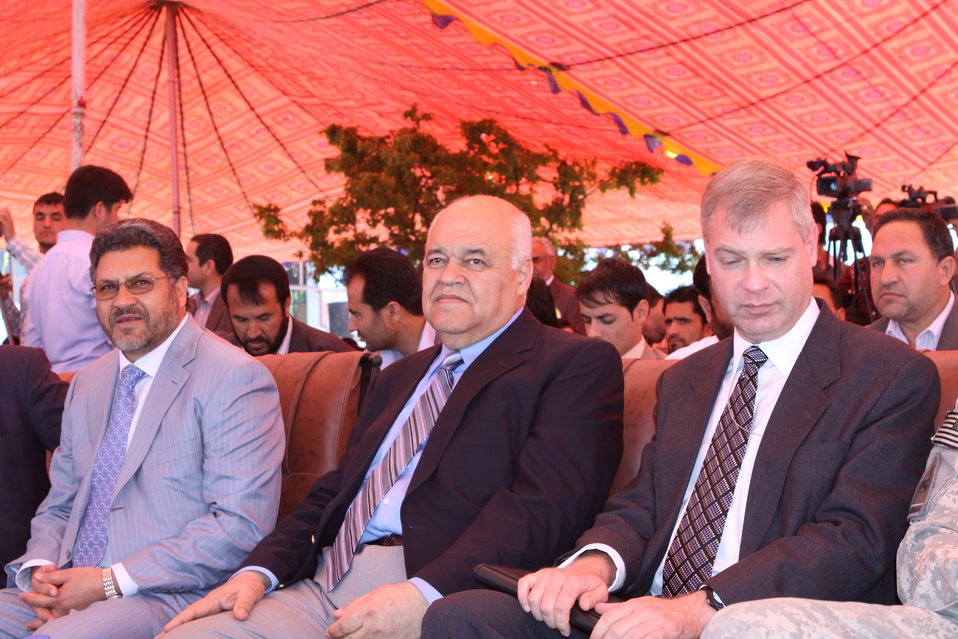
100522 ATVI Graduation 031